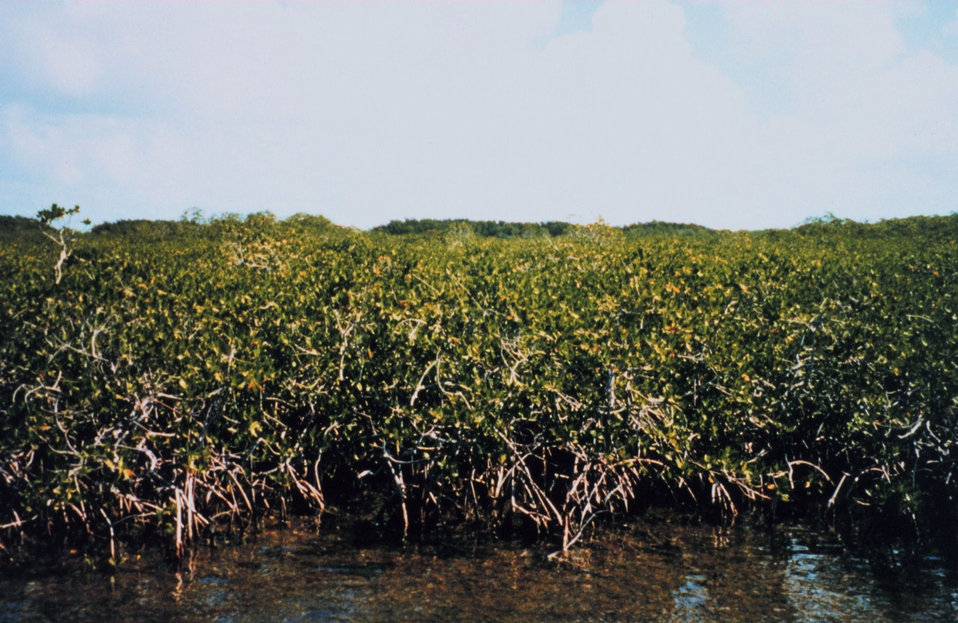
Typical red mangrove with prop roots - characteristic of high salinity area